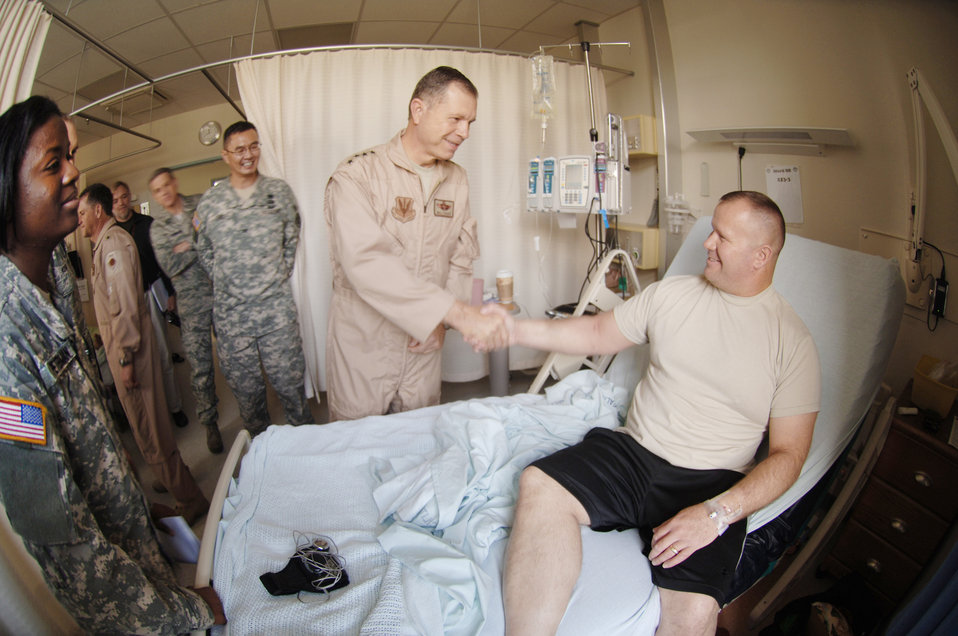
Air Combat Command leaders visit wounded warriors in Landstuhl Regional Medical Center

Gen. William M. Fraser III meets with Army Staff Sgt. Brian Bunch at Landstuhl Regional Medical Center, Germany, Nov. 20, 2009. Sergeant Bunch received treatment for injuries sustained in Afghanistan and was about to be discharged to return to his home station of Fort Polk, La. Army Col. John Cho (third from right), and Army Capt. Ebony Peterman (left) helped guide the hospital tour. Since 2004, the hospital has treated more than 58,000 wounded U.S. and coalition servicemembers and civilians injured in Iraq and Afghanistan. General Fraser is the commander of Air Combat Command and Sergeant Bunch is from the 546th Maintenance Battalion. Colonel Cho is the commander of the Landstuhl Regional Medical Center Hospital and Captain Peterman is a charge nurse.